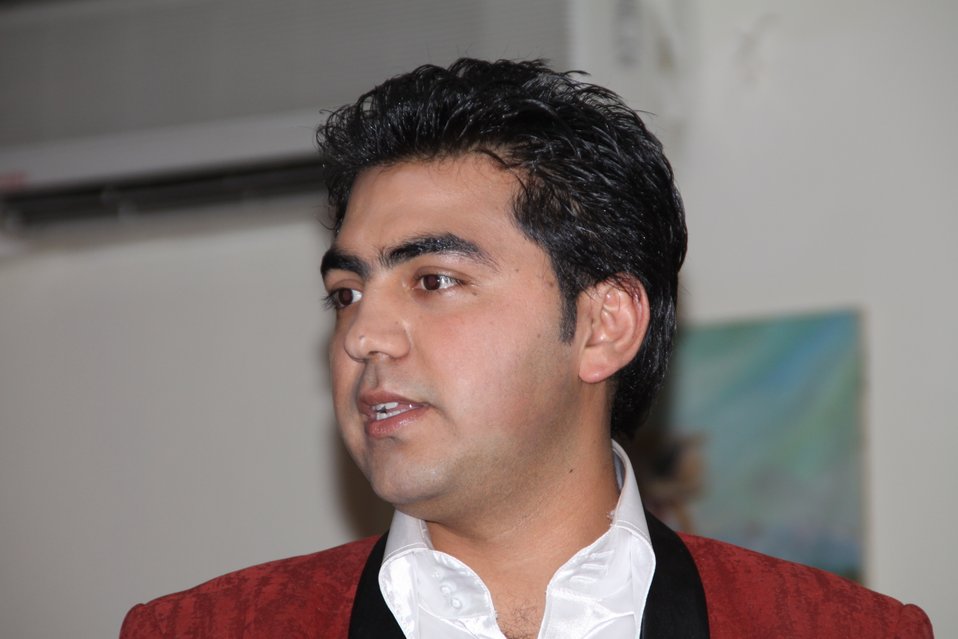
Wise Communication Releases Data from “On the Road” Viewership Survey

Kabul, Afghanistan (June 15, 2010) – Today, Wise Strategic Communication, with support from the United States Agency for International Development (USAID), released preliminary findings from a survey on the viewership of Tolo television’s “On the Road” (or Hai Maidan, Tai Maidan) program, saying more than 35 percent of the Afghanistan population tunes into the program every Saturday night.

Wise conducted the survey during April within nine selected provinces, polling more than 2,000 participants, undertook 45 key informant interviews and conducted nine focus groups to assess the opinions and impact of the show with the Afghan viewers.

“On the Road”, which is funded through USAID, builds Afghans’ national pride as a diverse, but unified, nation. Each week, the program focuses on a different region or province. The host, Mujeeb Arez, explores the social, cultural and historical aspects of different provinces, tasting local food, playing local games, and visiting the local historical sites. The TV program offers real Afghan stories from many locations around the country including numerous examples of successful development projects by the Afghan government in partnership with the international community. Through Mujeeb’s interviews with farmers, doctors, workers, youth and community leaders, Afghans see the changes within their country and the impact recent development efforts have had in Afghans’ own, unscripted words.

Some of the key findings from the survey include:

•The viewership was well-balanced, the polling data also indicated that Hazaras, Tajiks, younger respondents and the more educated were slightly more likely to watch the program.

•The program was received extremely well, with the respondents being enthusiastic about the opportunity to learn about the culture and history of different parts of Afghanistan. Fully, 97 percent of viewers wanted to continue watching the show and the top recommendation was to lengthen each broadcast.

•Of note was a finding that viewers associated this program with nation building.

Through the focus groups that Wise Communication conducted, a particular emphasis was placed upon the national unity “On the Road” promotes week after week. Some of the responses included:

•“It plays a positive role in the Afghan unity. When Afghans see other people in provinces with the same religion, and they get informed about their traditions and way of life, they see there are no differences between them.”

•“The positive point that I would like to mention is that people observe the customs of people from other provinces and it helps to reduce the problems with racism.”

“The survey that Wise Communication conducted indicates and validates the whole purpose of why this show has seen success,” said USAID Mission Director William M. Frej. “The program is bringing the people of Afghanistan together past political and social lines to embrace the many cultures and diversity that the country has to offer. We are a proud sponsor of this program, and we hope that this show will continue for many years to come.”

Part of the MOBY Group, TOLO aims to create innovative programming which appeals, informs and entertains Afghans. “The most exciting aspect to emerge from the success of ‘On the Road’ is that as a first of its kind for this format of programming in Afghanistan, is has enabled everyday Afghans to better get to know each other,” said Saad Mohseni, MOBY Group Chairman. “Above all, we’ve only looked at a small snapshot of the country, and there is so much more to see,” Mr Mohseni added.

The full study report may be downloaded from: www.irp-af.com